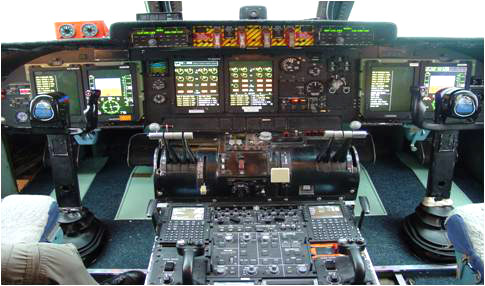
C-5M Super Galaxy

C-5 Galaxys are undergoing Avionics Modernization Program and Reliability Enhancement and Re-engining Program upgrades, modifying them to C-5M Super Galaxys. Dover Air Force Base, Del., received the first C-5M in a ceremony Feb. 9.